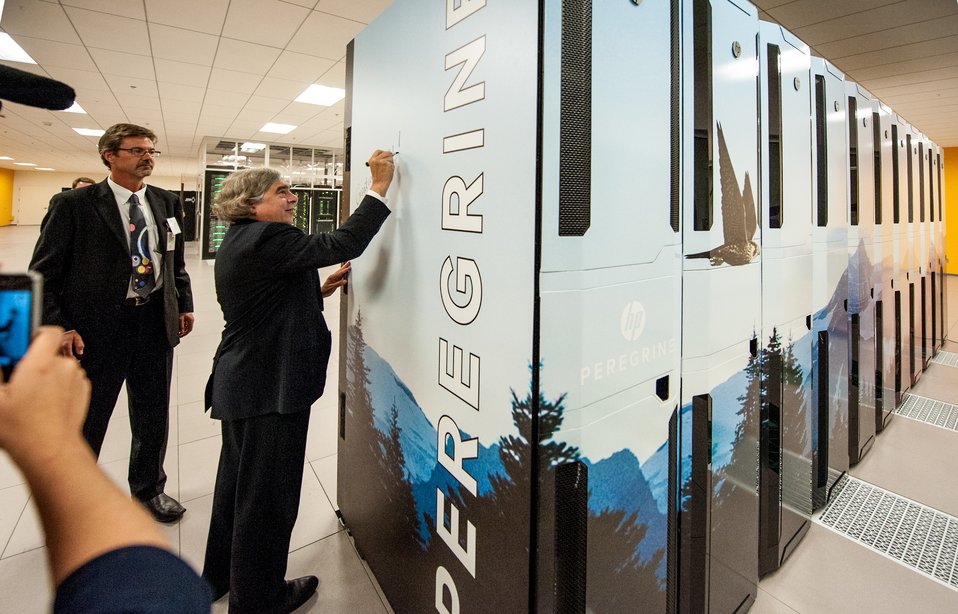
ENERGY SECRETARY ERNEST MONIZ JOINS STEVE HAMMOND, NREL IN UNVEILING PEREGRINE, THE NEWEST DOE SUPERCOMPUTER CAPABLE OF 1 MILLION BILLION CALCULATIONS PER SECOND DURING HIS VISIT TO DEDICATE THE NEW (ESIF).

NREL COLLABORATED WITH HP AND INTEL TO DEVELOP AN INNOVATIVE WARM-WATER, LIQUIP-COOLED SUPERCOMPUTER. PEREGRINE WILL RESIDE IN THE NEW DATA CENTER, DESIGNED TO BE THE WORLD'S MOST ENERGY-EFFICIENT HIGH PERFORMANCE COMPUTING DATA CENTER.